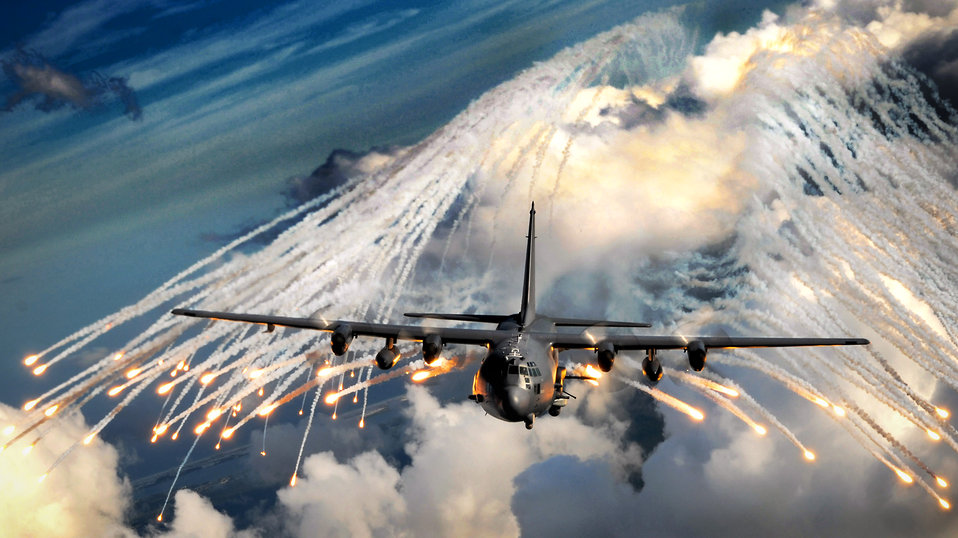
Evasive action

An AC-130U gunship jettisons flares Aug. 20 over an area near Hurlburt Field, Fla. The flares are a countermeasure for heat-seeking missiles that may be fired at the aircraft during real world missions.